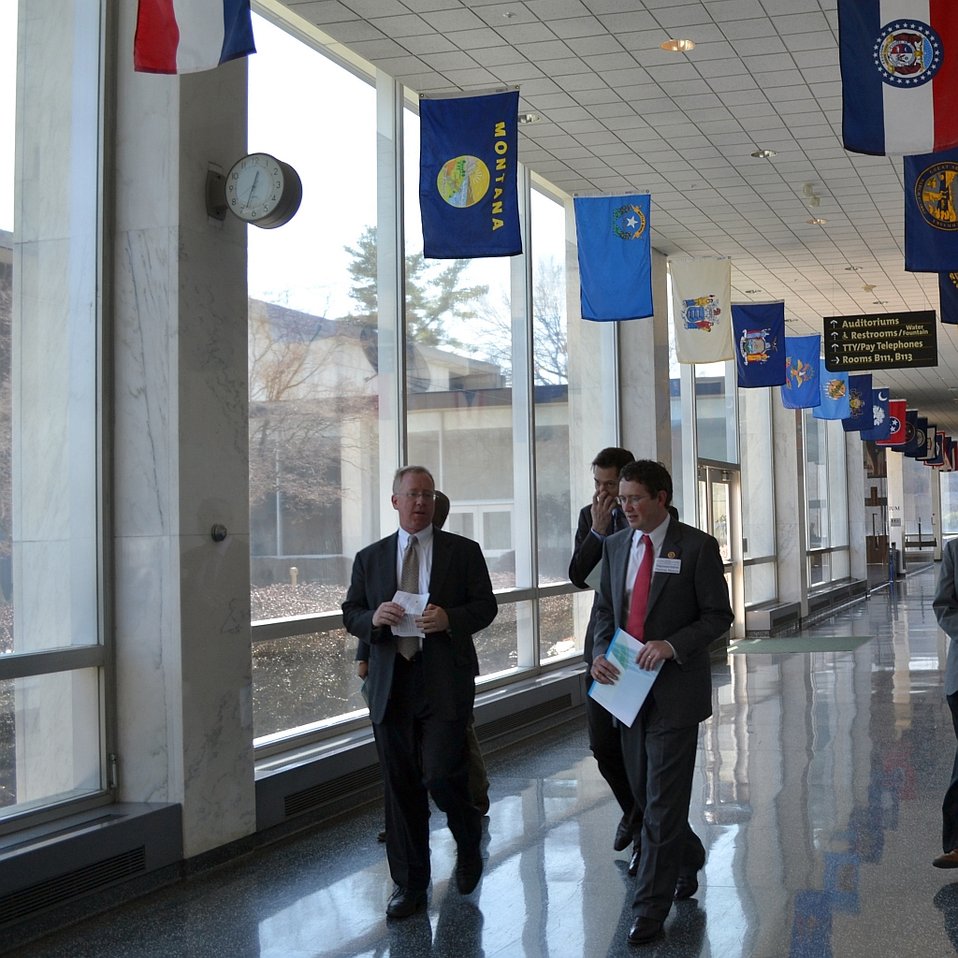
Representative Massie Tour #1

Mr. Jim Schufreider [left] Director of the NIST Office of Congressional & Legislative Affairs accompanies U.S. Representative Thomas Massie (R. KY) [center] on a tour of the NIST Gaithersburg MD campus.